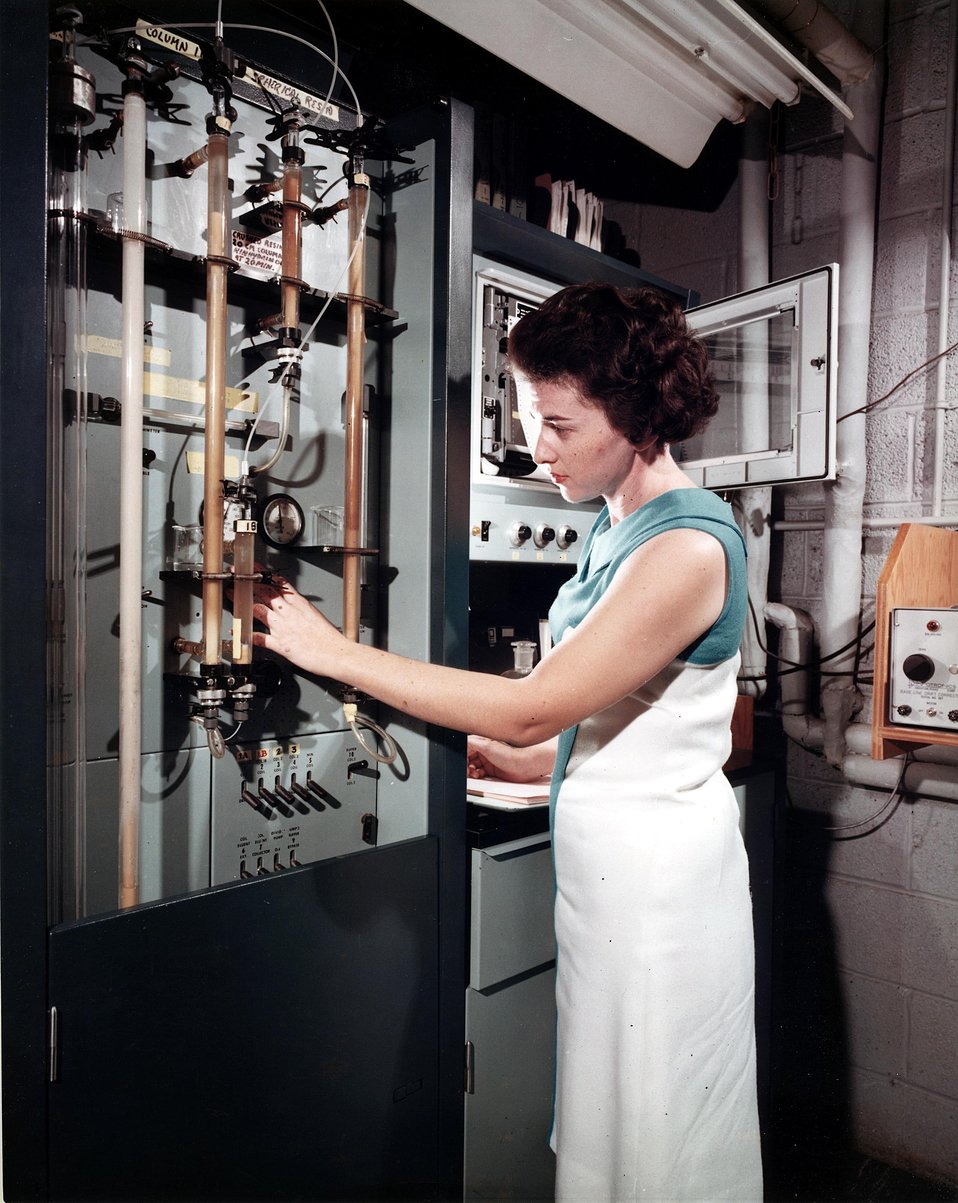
This automatic amino acid analyzer is an indispensable tool in protein research since it gives the amount of each amino acid present in a given protein within a reasonable time. c. 1966